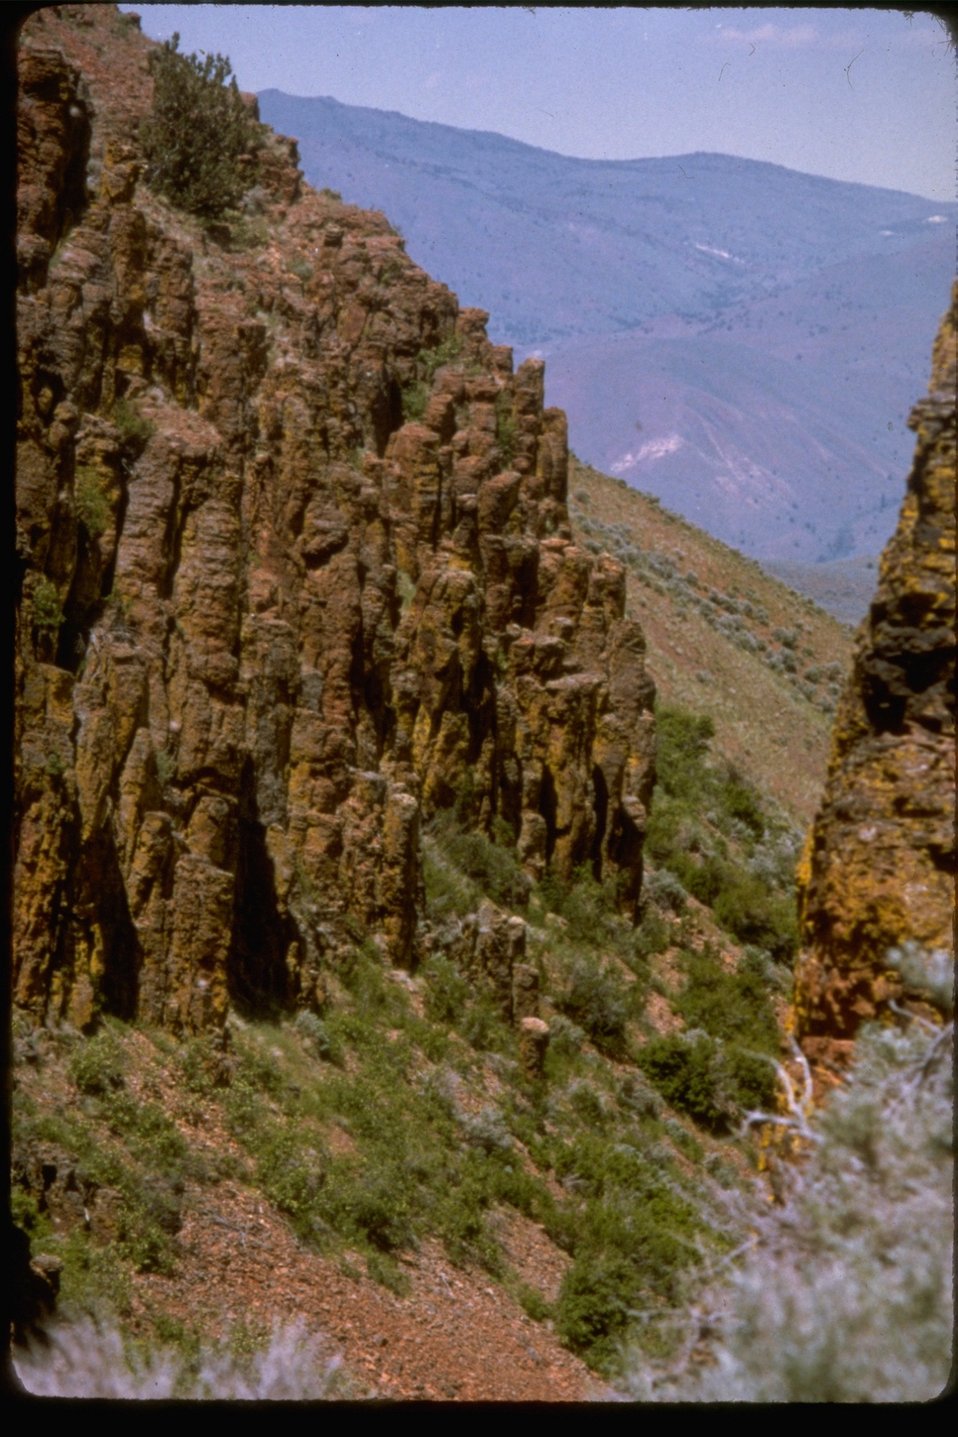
A rocky ravine in the Sperry Creek Wilderness Study Area. OR 3-35.